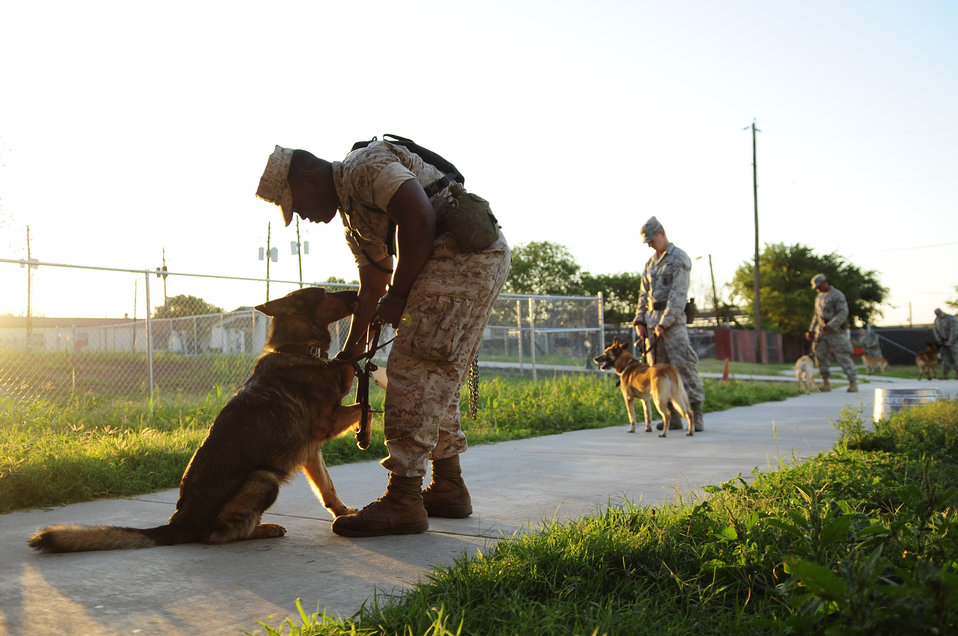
Department of Defense Military Working Dog schoolhouse officials outline adoption process

Military working dogs and their handlers wait outside the Military Working Dog Hospital for a check up at Lackland Air Force Base, Texas. Military working dogs are enrolled in a 60- to 90-day training program where they are taught to detect explosives and drugs. They are also taught deterrence training and how to protect their handler.